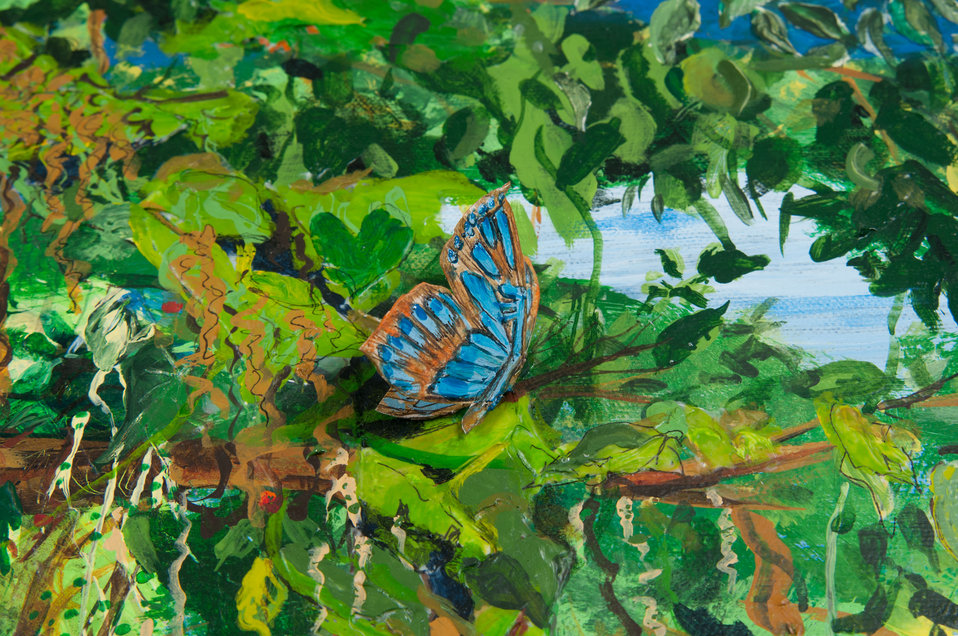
Online Viewer's Choice entries of the 2013 Art & Agriculture, Tuesday, July 9, 2013, in the South Building, Washington, D.C. Themes were expressed by employees from across the department and the contest was open to full-time and part-time USDA employees. Winning artwork will be displayed till the end of the year. U.S. Artistic expression is a creative outlet that is vital for an individual to grow and develop.